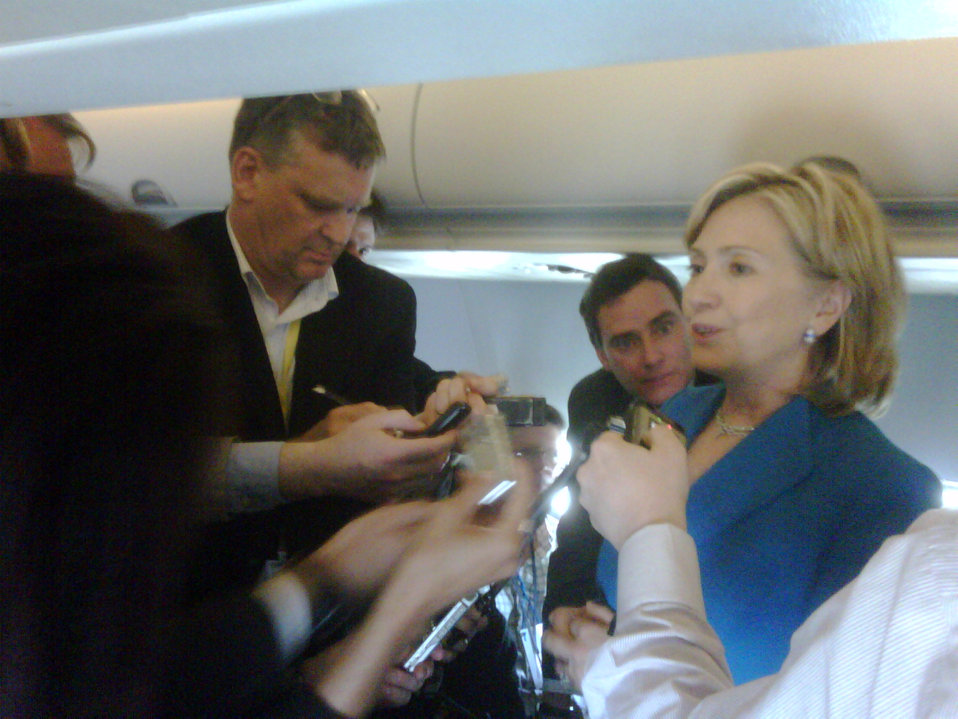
Secretary Clinton Takes Questions on the Plane

U.S. Secretary of State Hillary Rodham Clinton takes questions from reporters accompanying her during flight from Uruguay to Argentina March 1, 2010.